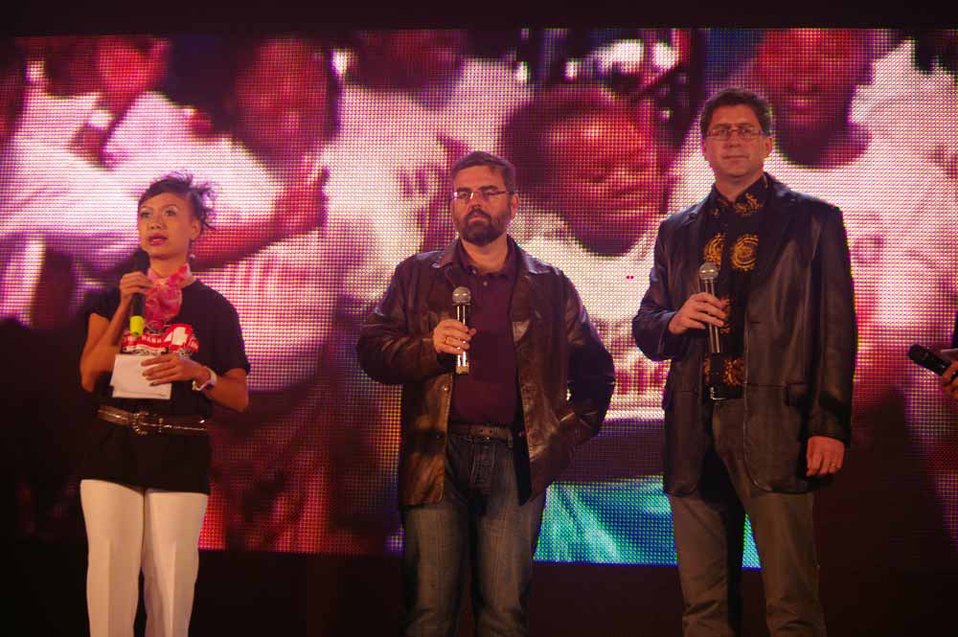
dance4life, Hanoi